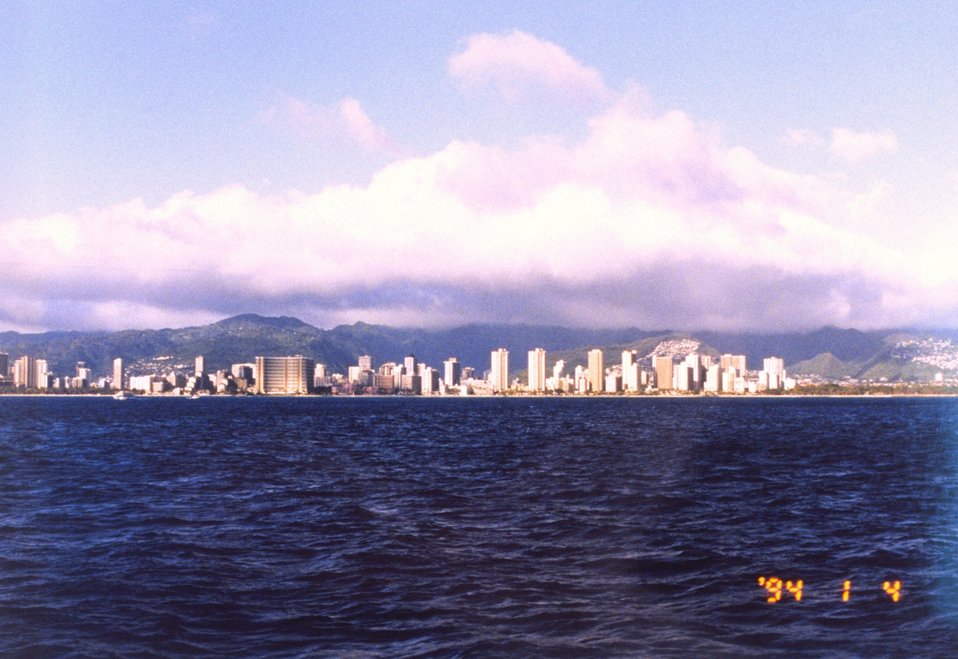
Waikiki hotels as seen from offshore.